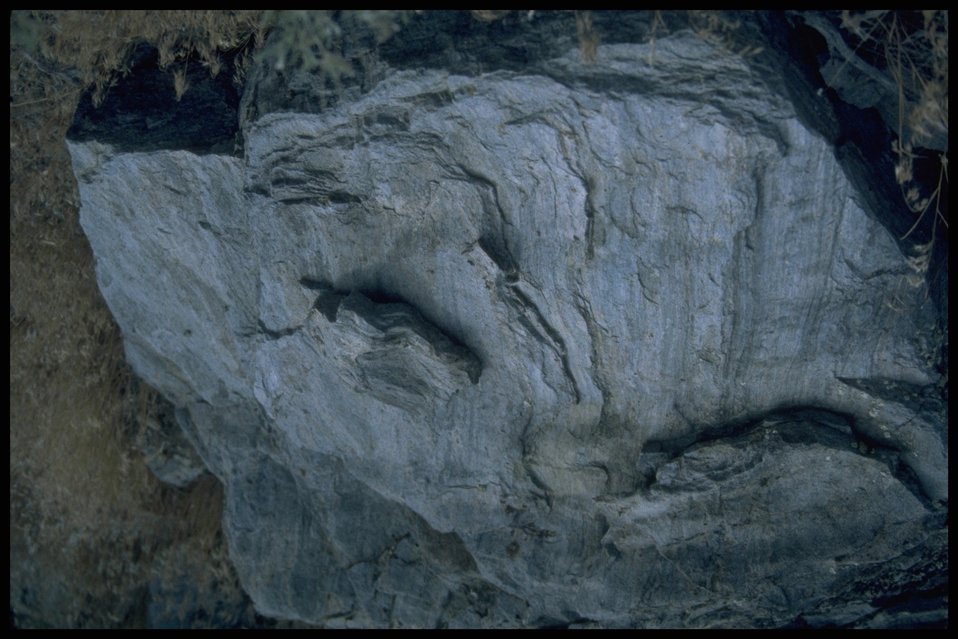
Lakeview District rock.